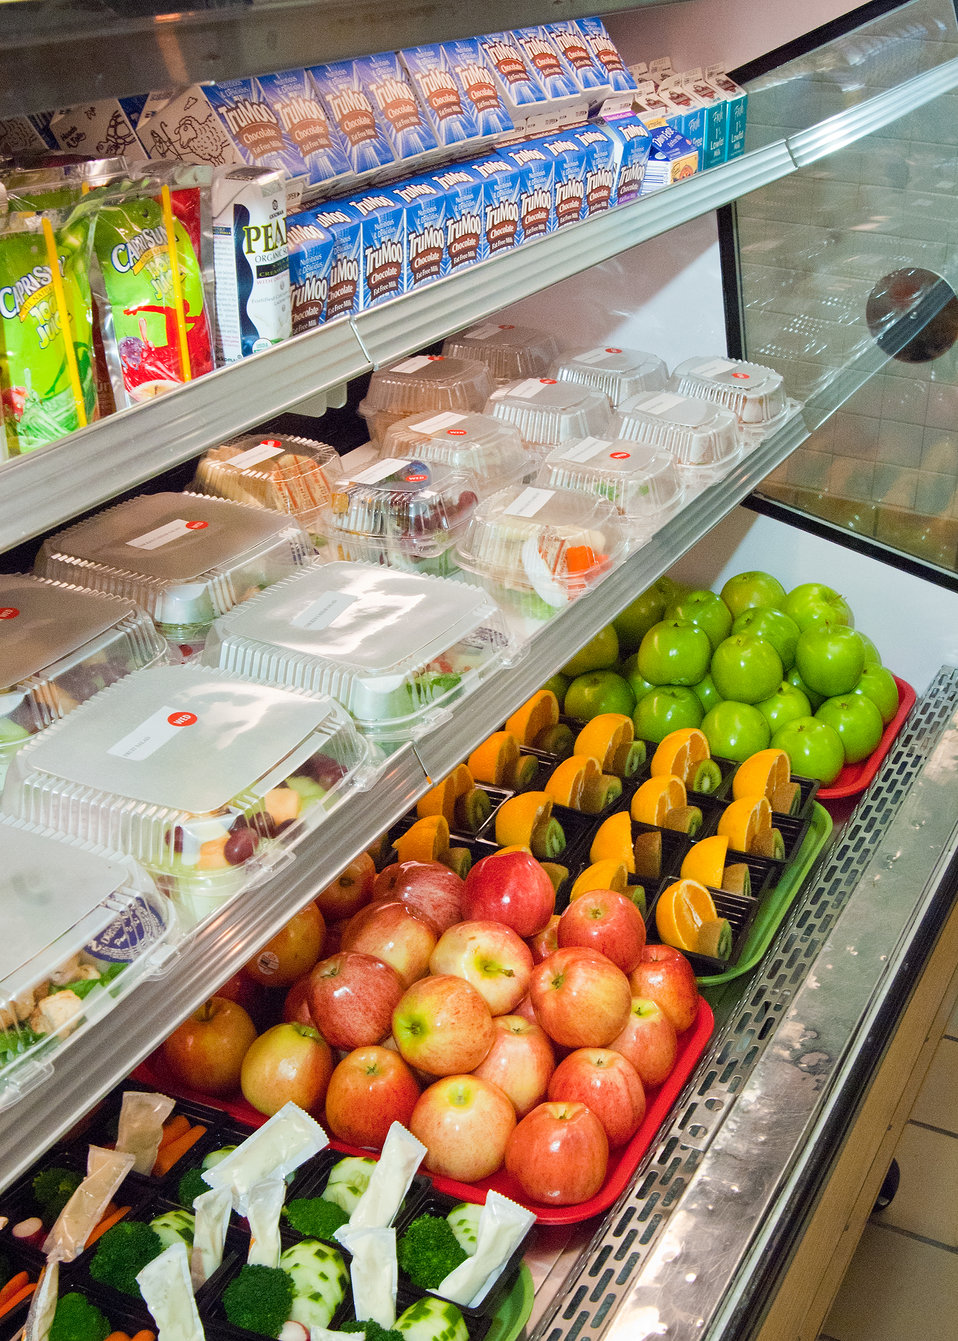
Healthy choices of fresh fruit, salads, tuna fish sandwiches, vegetables and ham and cheese wraps at Washington-Lee High School in Arlington, Virginia for lunch service on Wednesday, October 19, 2011. The fruit, salads, sandwiches, vegetables and wraps are made available through the National School Lunch Program. The National School Lunch Program is a federally assisted meal program administered by the United States Department of Agriculture, Food and Nutrition Service operating in public, nonprofit private schools and residential child care institutions. It provides nutritionally balanced, low-cost or free lunches to children each school day.